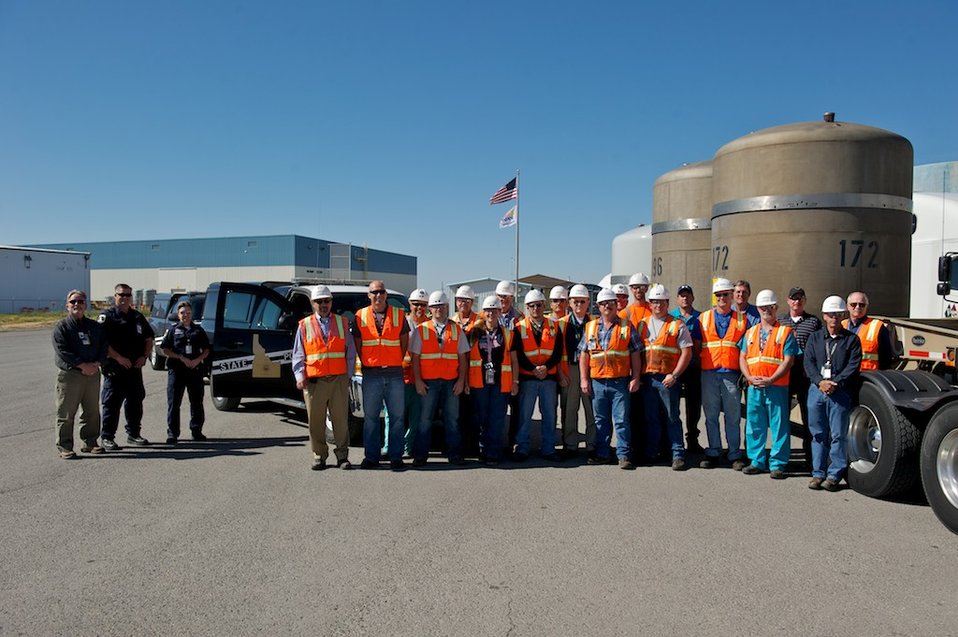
10,000th Shipment

The 10,000th shipment of TRU waste bound for WIPP. The waste was shipped from the Advanced Mixed Waste Treatment Project.